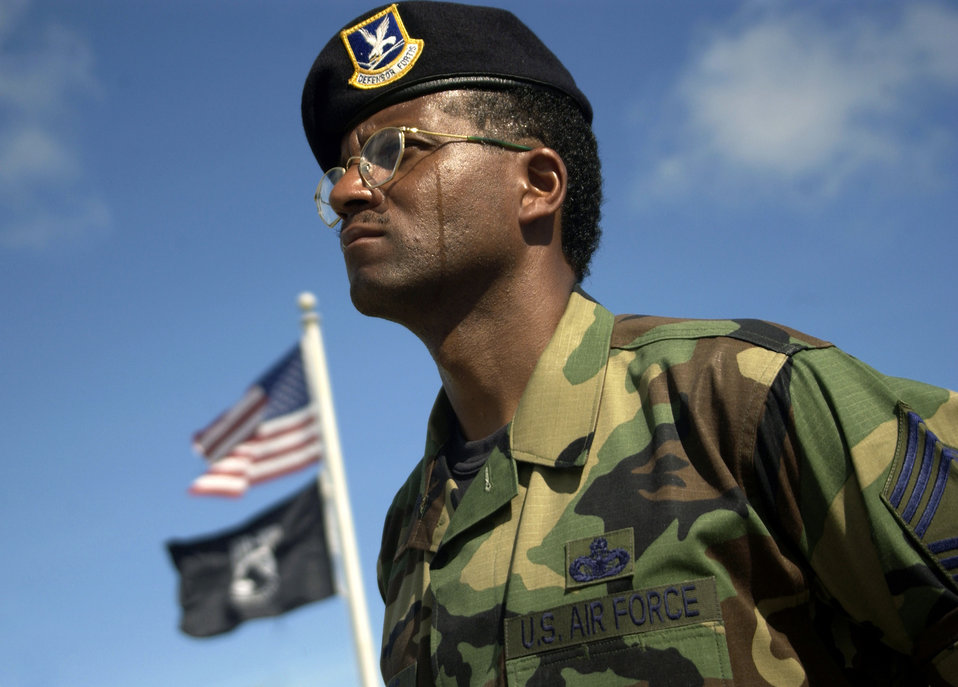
Remembering service, sacrifice

ANDERSEN AIR FORCE BASE, Guam -- Chief Master Sgt. Errol Sanders sheds a tear during the reciting of the military Code of Conduct. The reading was part of a wreath-laying ceremony at the Arc Light Memorial here in memory and dedication of National POW/MIA Day. On Sept. 14, the United States honors the service and sacrifice of servicemembers who have been prisoners of war and those who are missing in action. Chief Sanders is assigned to the base's 36th Security Forces Squadron.